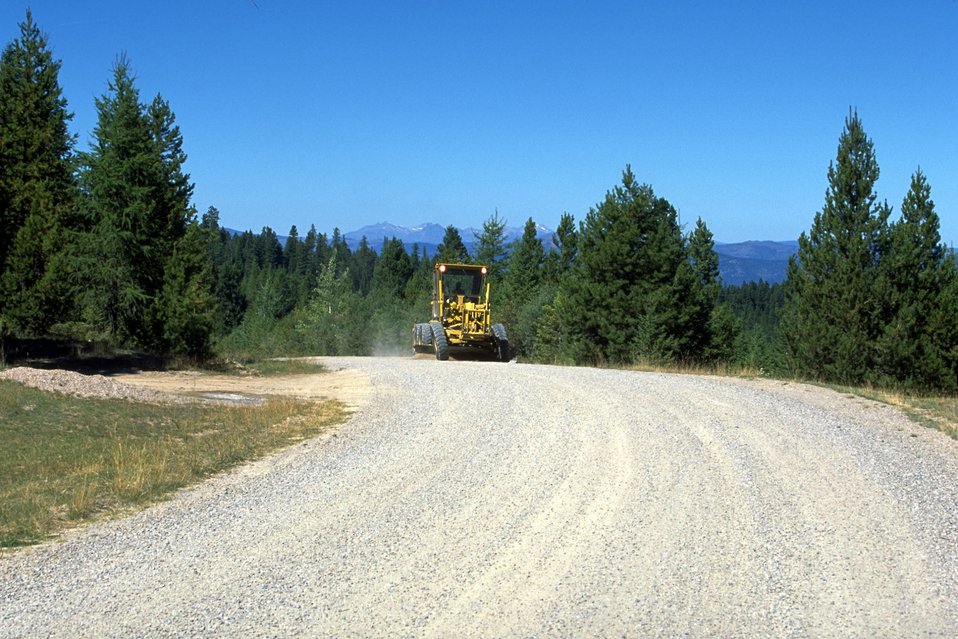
Garnet Back Country Byway--road maintenance work